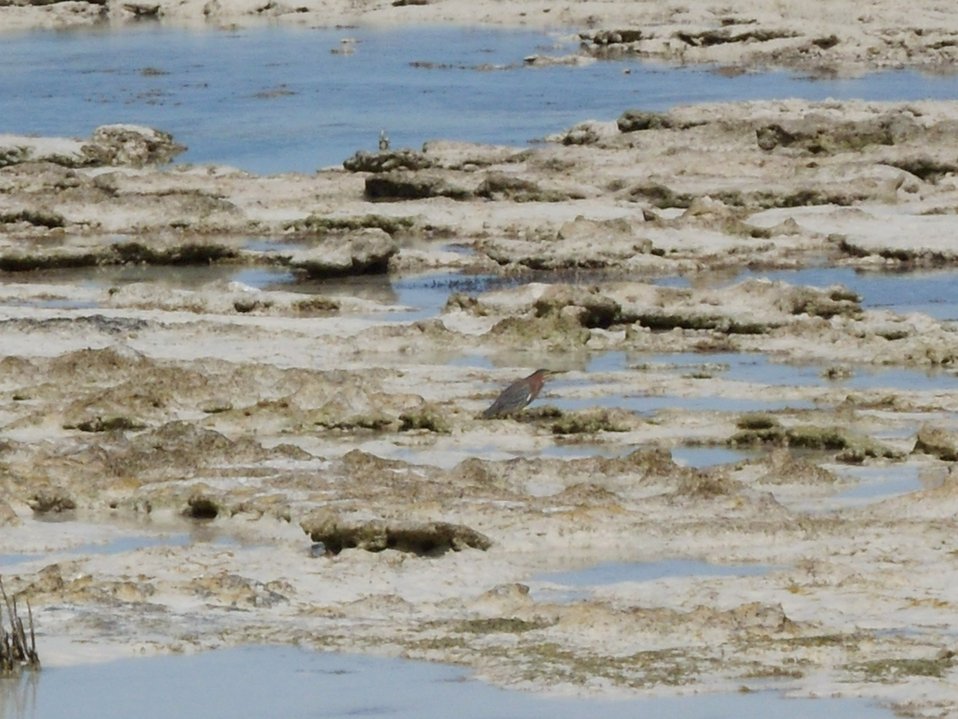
Green heron foraging in rocky intertidal zone

On South Andros Island